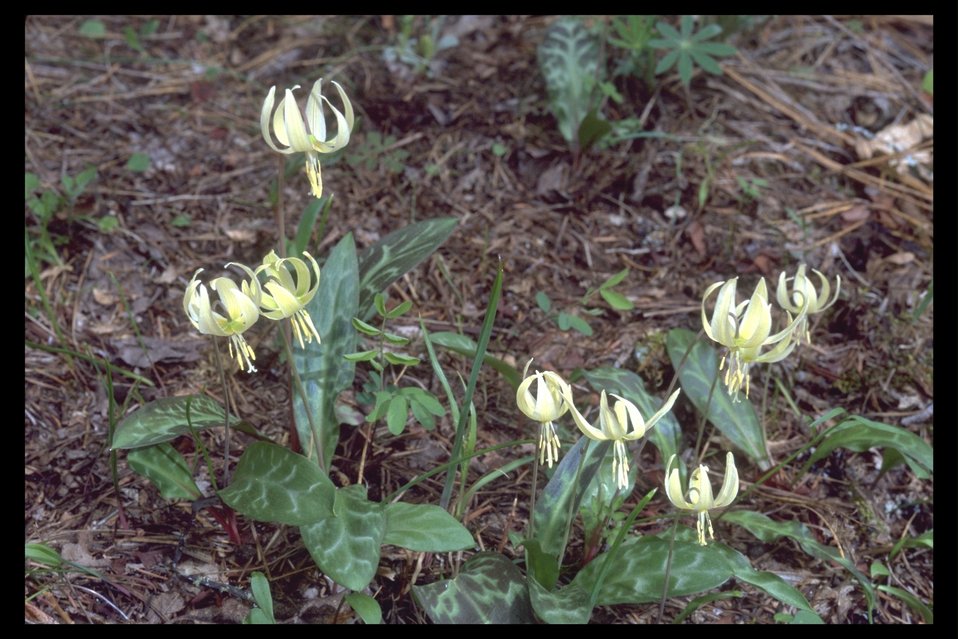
Oregon Fawn Lily (Erythronium oregonum).